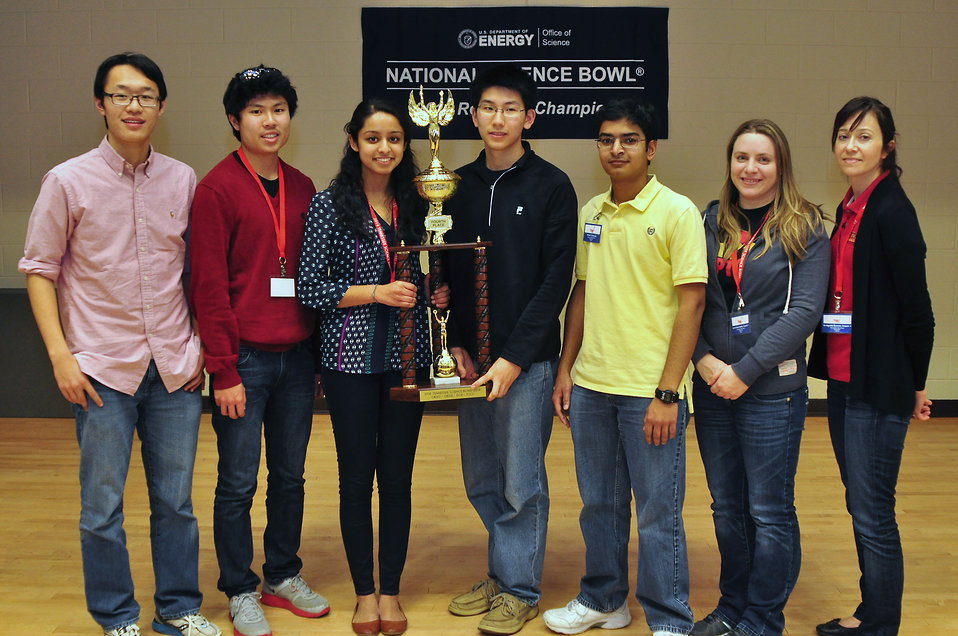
4th place Ravenwood HS 2014 TN DOE Science Bowl

14-026 DOE photo Lynn Freeny 2-22-2014Forth Place Ravenwood Left to Right Gene Li, AJ Wei, Niman, Mann, Stanley Xiang, Rohan Tummala, Coach Avrill Buerstetta, Coach Bridgette Barron